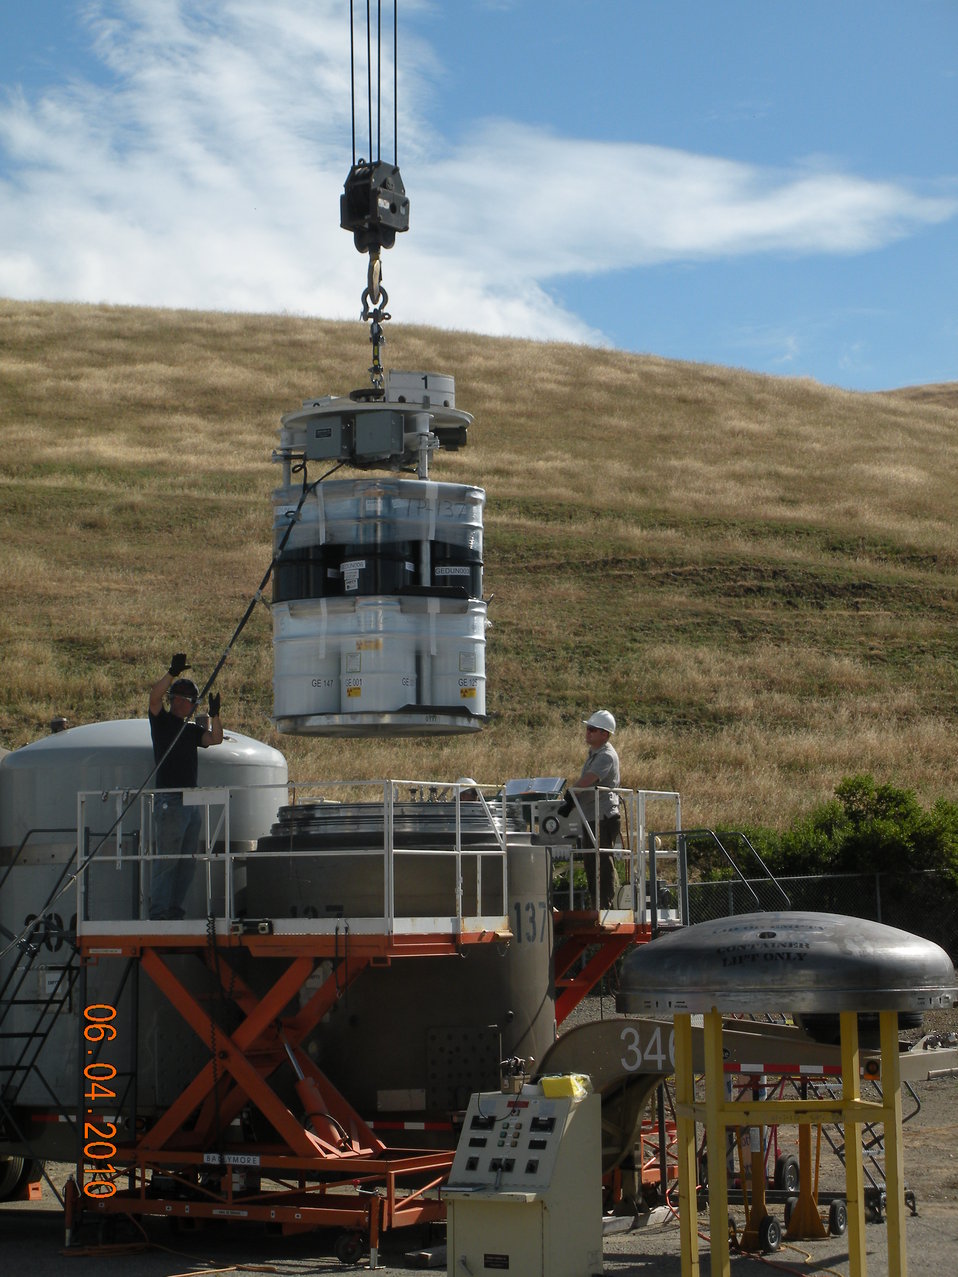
SHOWN IS THE LOADING CONTACT- HANDLED TRANSURANIC WASTE INTO TRUPACT-LLS AT THE GENERAL ELECTRIC VALLECITOS NUCLEAR CENTER (GEVNC) IN IDAHO.

This shipment is headed to Idaho for characterization shipment to Waste Isolation Pilot Plant. (WIPP)